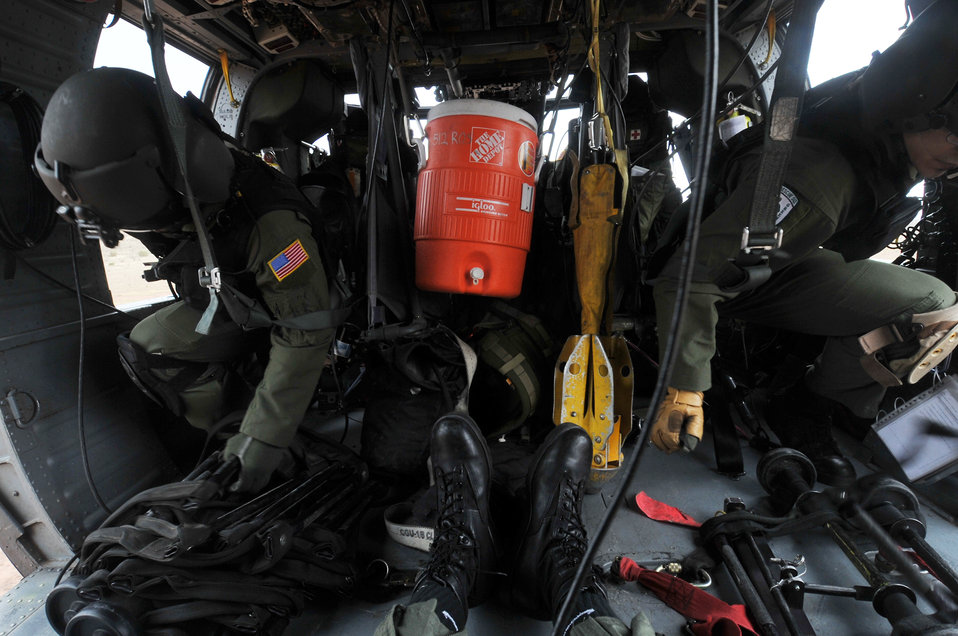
Helicopter crews train at Kirtland AFB

Airman 1st Class Sanquez Lee (left) and Staff Sgt. Logan Ayala prepare to drop fast ropes out of a HH-60G Pave Hawk Aug. 25, 2009, near Kirtland Air Force Base, N.M. Sergeant Ayala is a student flight engineer and Airman Lee is a student gunner, both are assigned to the 58th Training Squadron.